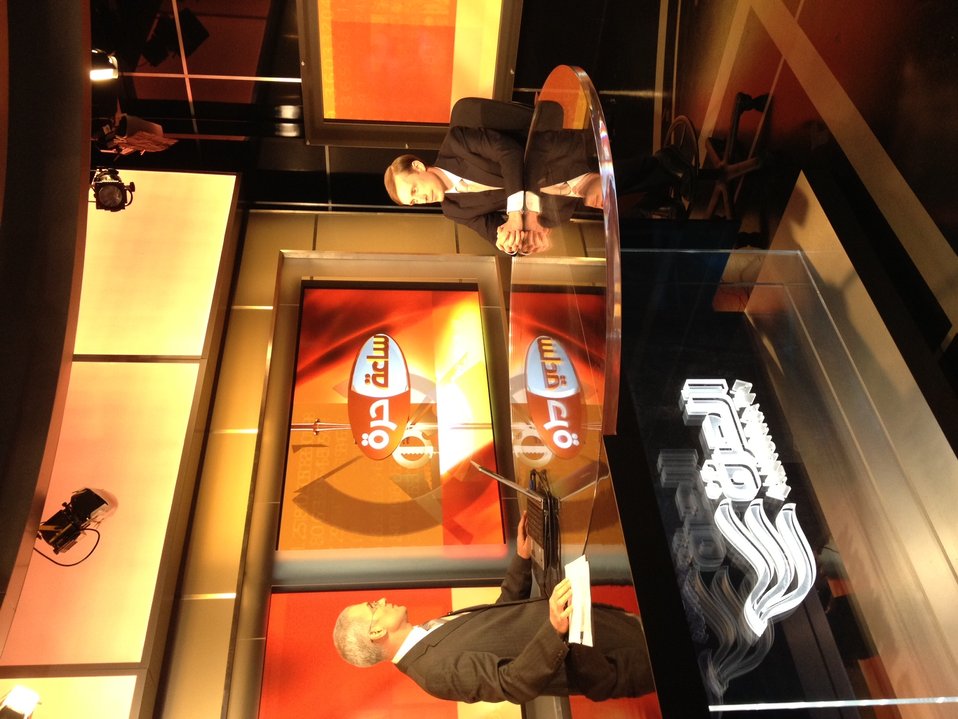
Director Jake Sullivan Is Interviewed By Alhurra

Jake Sullivan, Director of Policy Planning at the U.S. Department of State and Deputy Chief of Staff to Secretary of State Clinton, is interviewed by Alhurra in Washington, D.C., on January 5, 2012.